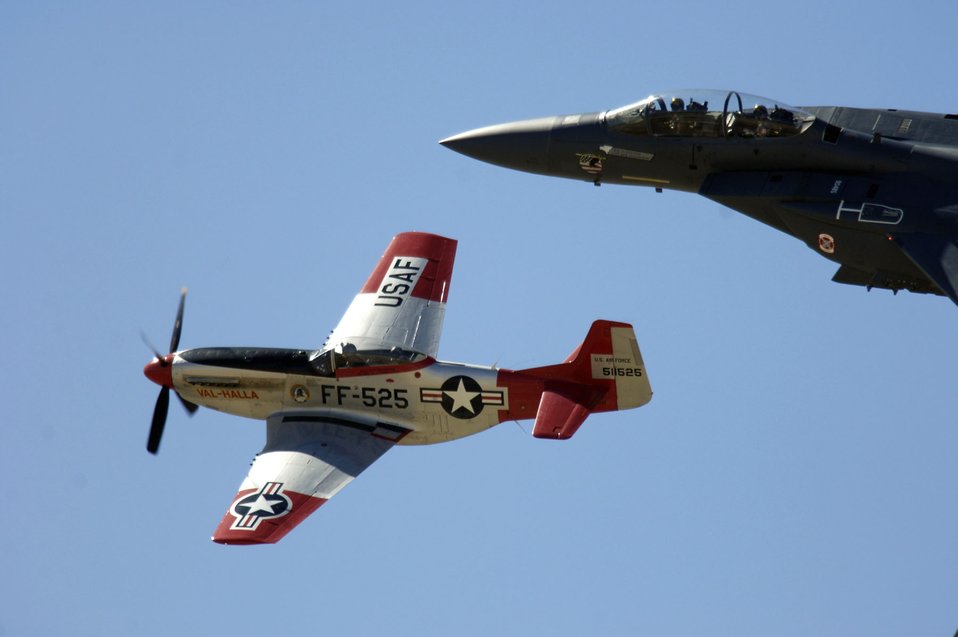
Heritage Conference mixes old with new

A P-51 Mustang and an F-15E Strike Eagle fly in formation March 3 during the 2007 Heritage Conference at Davis-Monthan Air Force Base, Ariz. The conference provides an opportunity for Air Combat Command demonstration pilots to train together with modern and historic military aircraft in preparation for the upcoming air-show season.